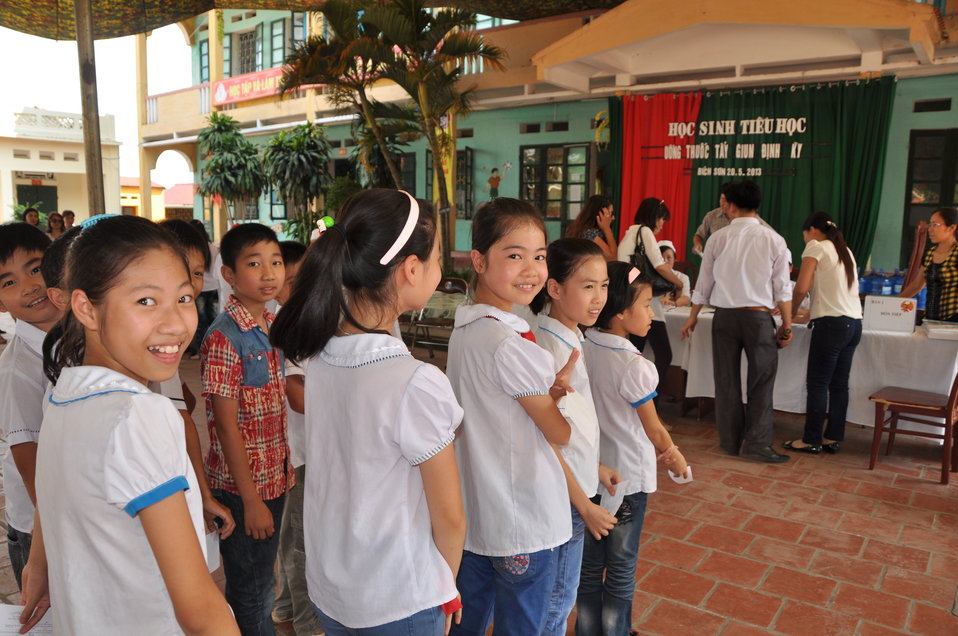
USAID supports deworming education and medication distribution in Bac Giang Province

May 20, 2013